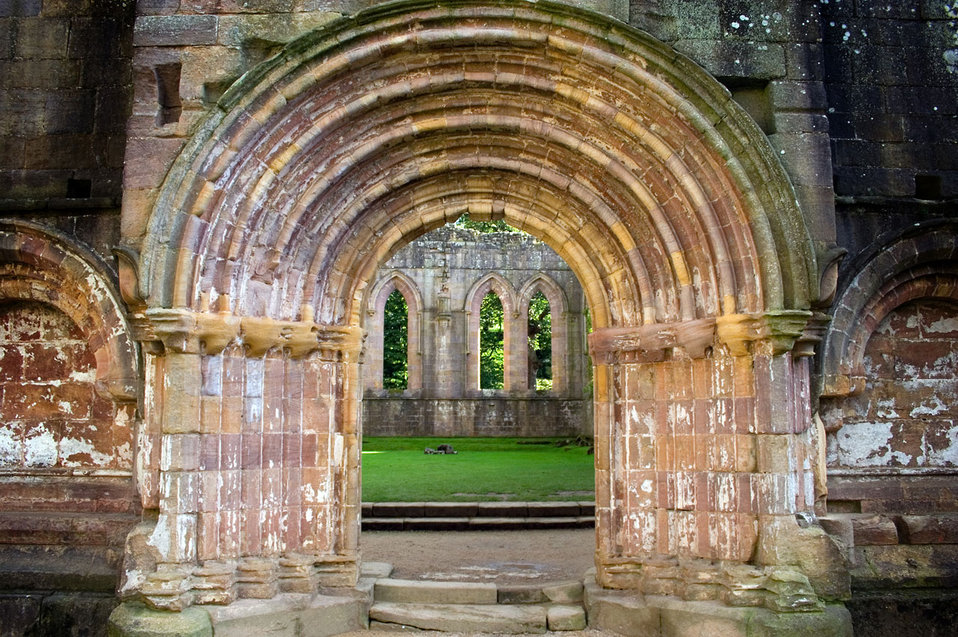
A gate

An old gate in fountains abbey.